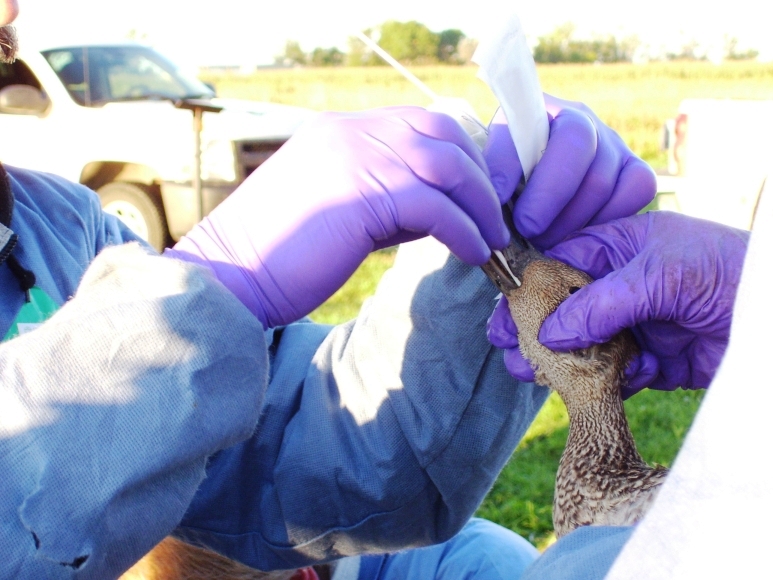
Avian Influenza Sampling

This Northern Pintail at Sand Lake National Wildlife Refuge in South Dakota is being sampled for avian influenza. Combined with testing of dead birds, disease samples collected from live birds also help us understand health status of wild populations.